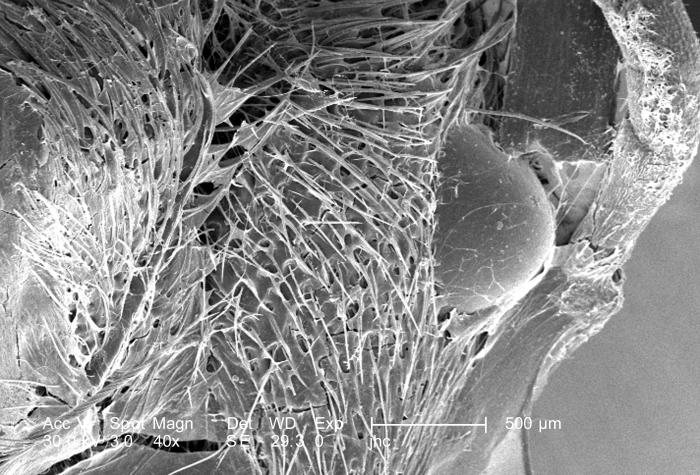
Under a magnification of 40X, this scanning electron micrograph (SEM) revealed some of the ultrastructural architecture found in a brown recluse spider's, Loxesceles reclusa, web that had entrapped an unidentified ant. Though the prey had been enwrapped in a silk cocoon, there were still some of its body parts that were visible such as one of its two compound eyes, and one of its two segmented antennae (background). The antenna is composed of three main regions: scape, pedicle, and flagellum. The scape attaches the sensory organ to the head region, and the pedicle joins the distal, jointed flagellum to the scape.